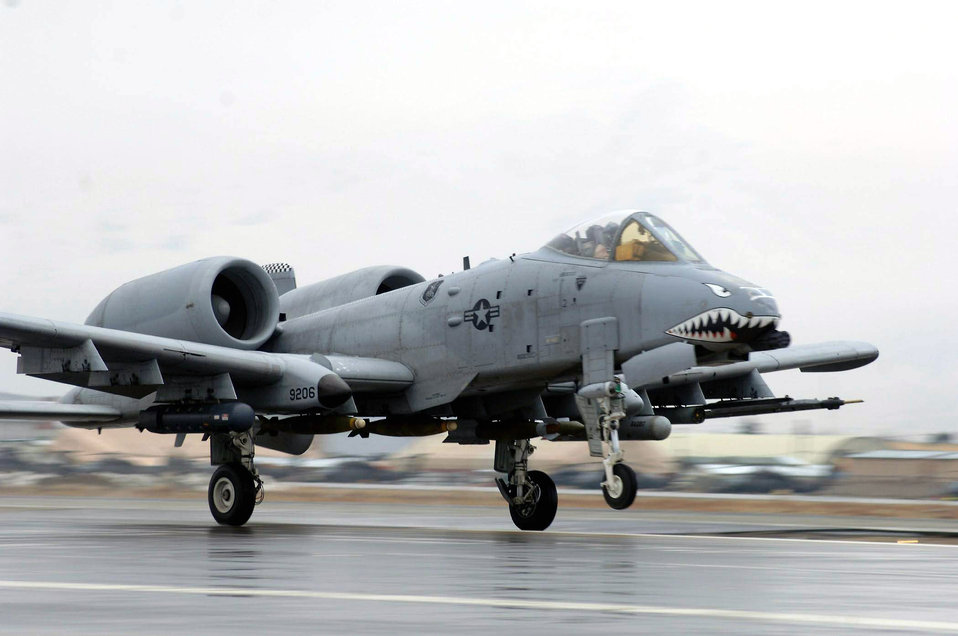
Sept. 23 airpower summary: A-10s deter insurgent activities

An A-10 Thunderbolt II lands after a recent mission. A-10s can employ a wide variety of conventional munitions, including general purpose bombs, cluster bomb units, laser guided bombs, joint direct attack munitions and wind corrected munitions dispenser. A-10s provide close-air support in Operation Enduring Freedom in Afghanistan.